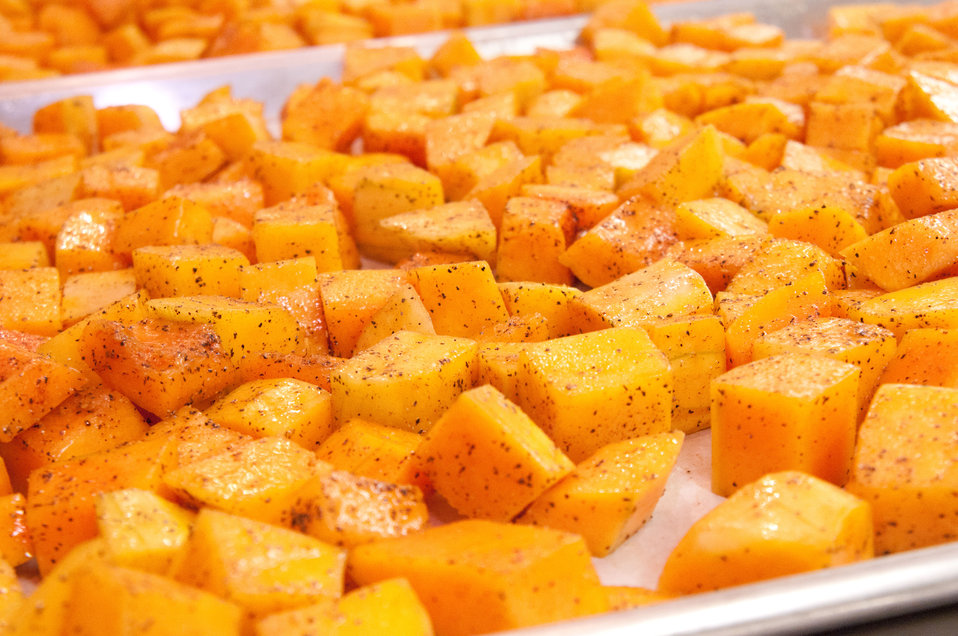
Seasoned and cubed butternut squash ready for the oven at Nottingham Elementary School in Arlington, VA, on Wednesday, October 12, 2011.